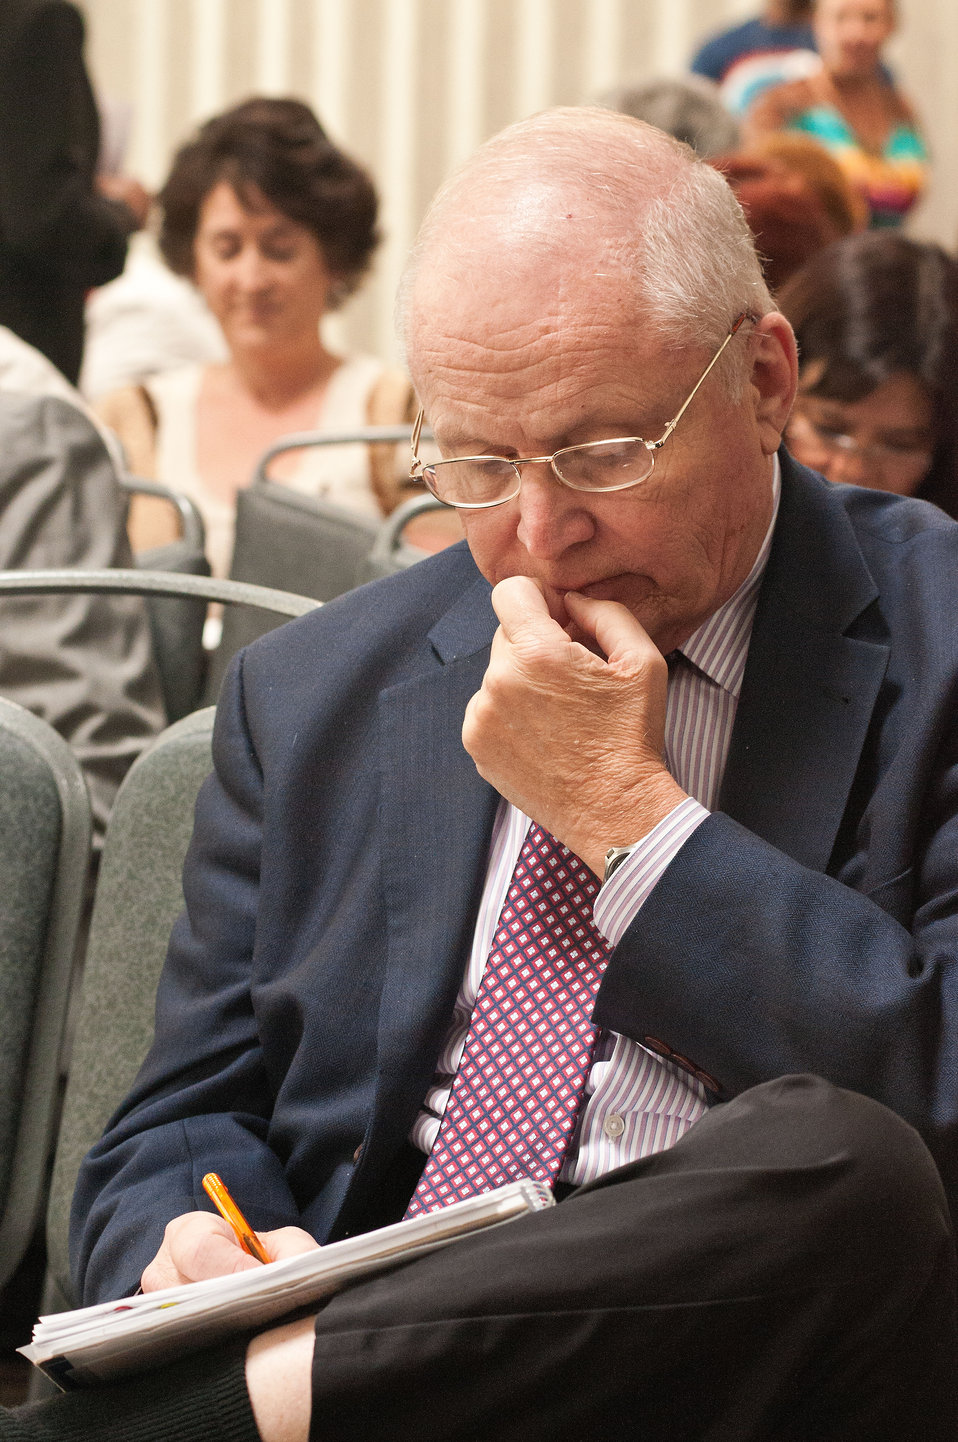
U.S. Department of Agriculture (USDA) Rural Development (RD) employees answer questionnaires associated with tele-work procedures during one of many forums held for the Rural Development Cultural Transformation Day event held in Washington, D.C. on Thursday, July 12, 2012.